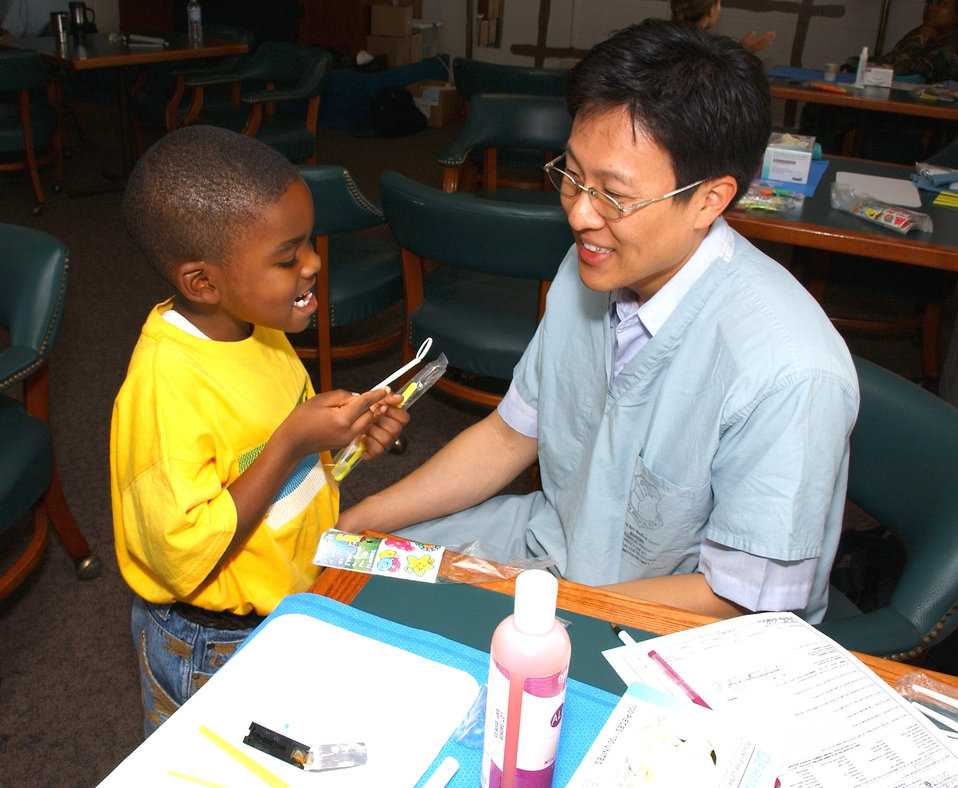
Course prepares dentists to treat children worldwide

Capt. Jaesuk Yoo lets Ross Chandler apply a fluoride treatment to his teeth Sept. 13 at Lackland Air Force Base, Texas. Captain Yoo is a Pediatric Dental Course resident from Osan Air Base, South Korea. Ross is the son of Senior Airman Cabrille Chandler, a 59th Medical Wing Support Squadron referral clerk at Lackland AFB.